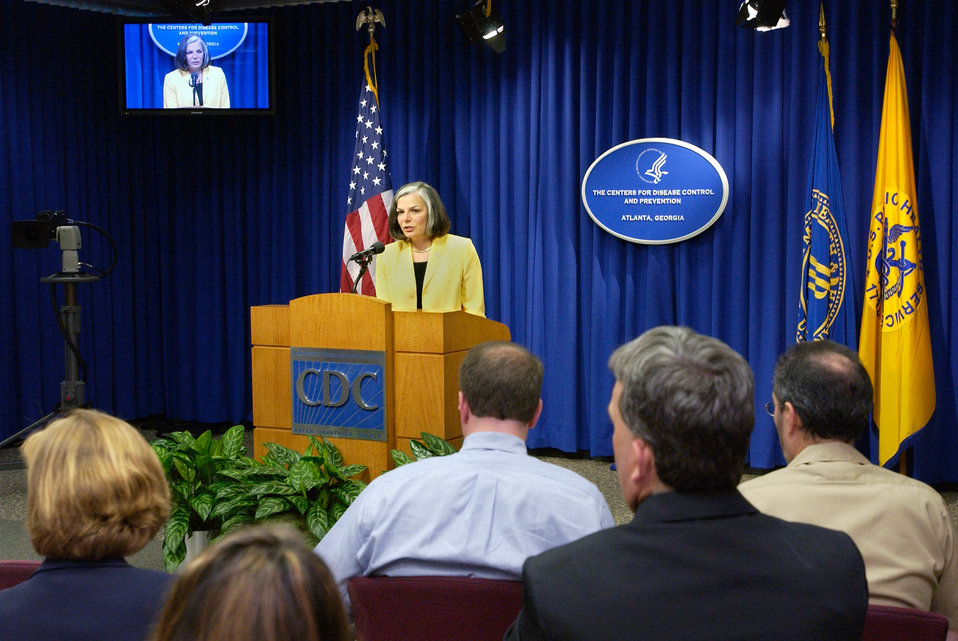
This was the former Director of the CDC (2002 - 2008), Julie Gerberding, MD, MPH addressing reporters at a news conference on September 18, 2003.